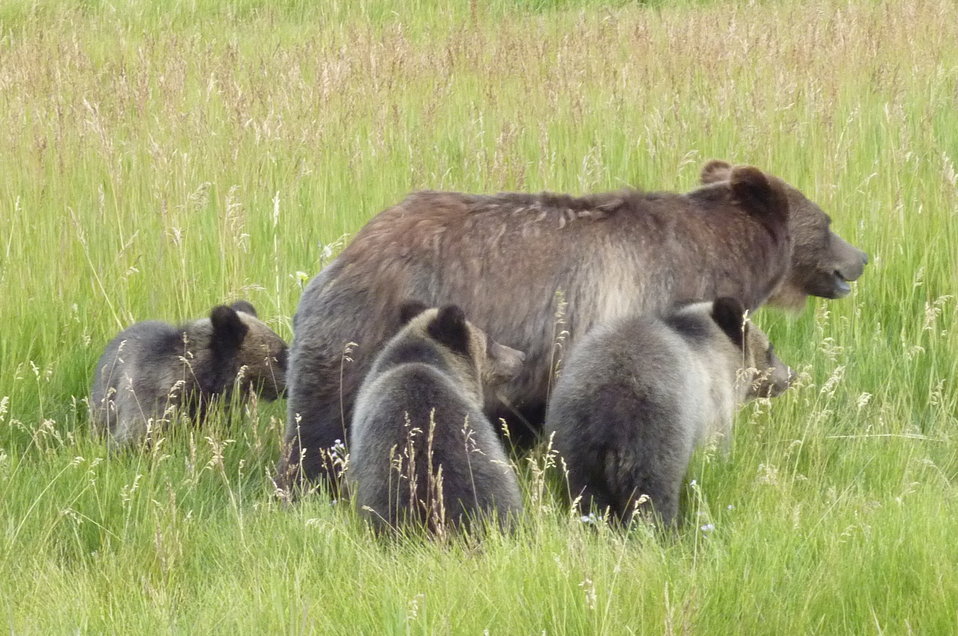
Grizzly Bears at the National Elk Refuge

Grizzly bears have been sighted on the National Elk Refuge, including designated elk and bison hunting areas.

The Refuge web site lists some bear safety information, focusing on the hunting season. See 1.usa.gov/1aDMyI1 for more information.

Photo credit: USFWS / Ture Schultz, National Elk Refuge volunteer